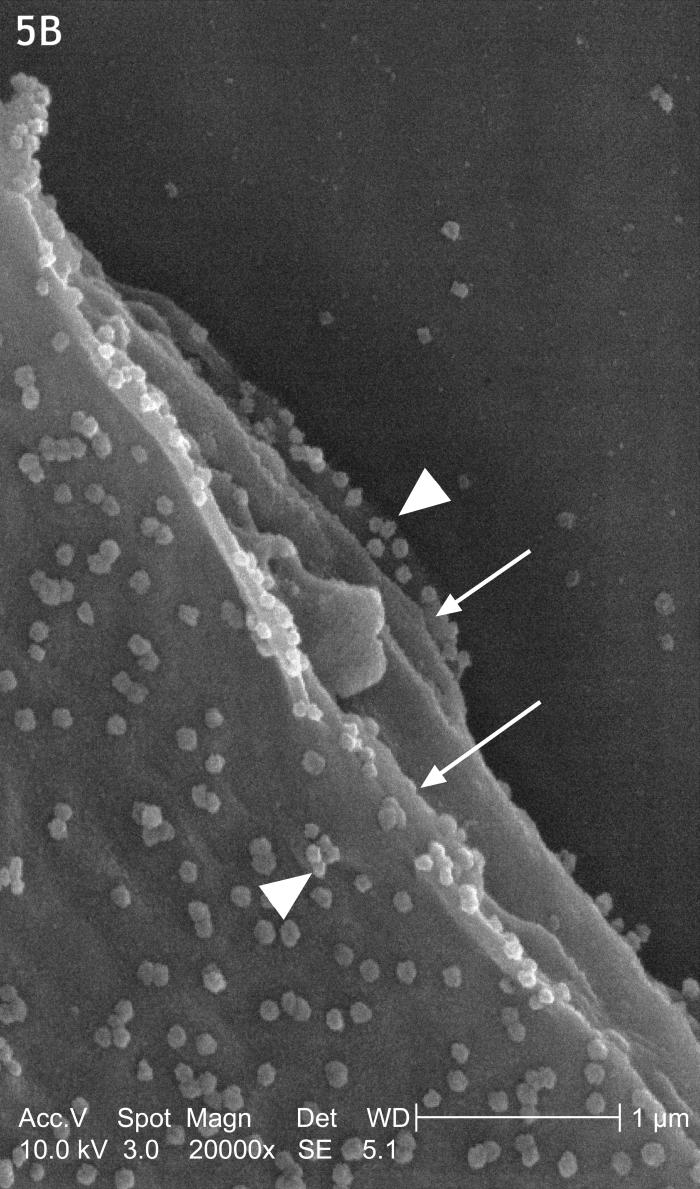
This scanning electron micrograph (SEM) revealed the thickened, layered edge of SARS infected Vero E6 culture cells.